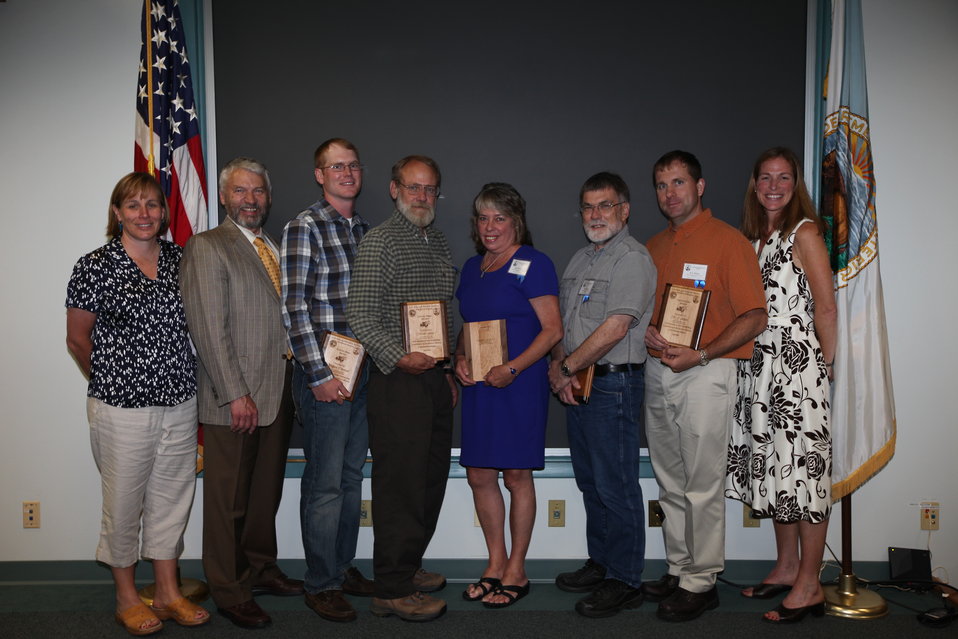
Unsung Heroes White River NFH staff

From left to right: Deputy Regional Director Deb Rocque, Deputy Director Rowan Gould, Will Olmstead, Scott Frost, Judy Romero, Ken Gillette, B.J. Allaire, and Regional Director Wendi Weber